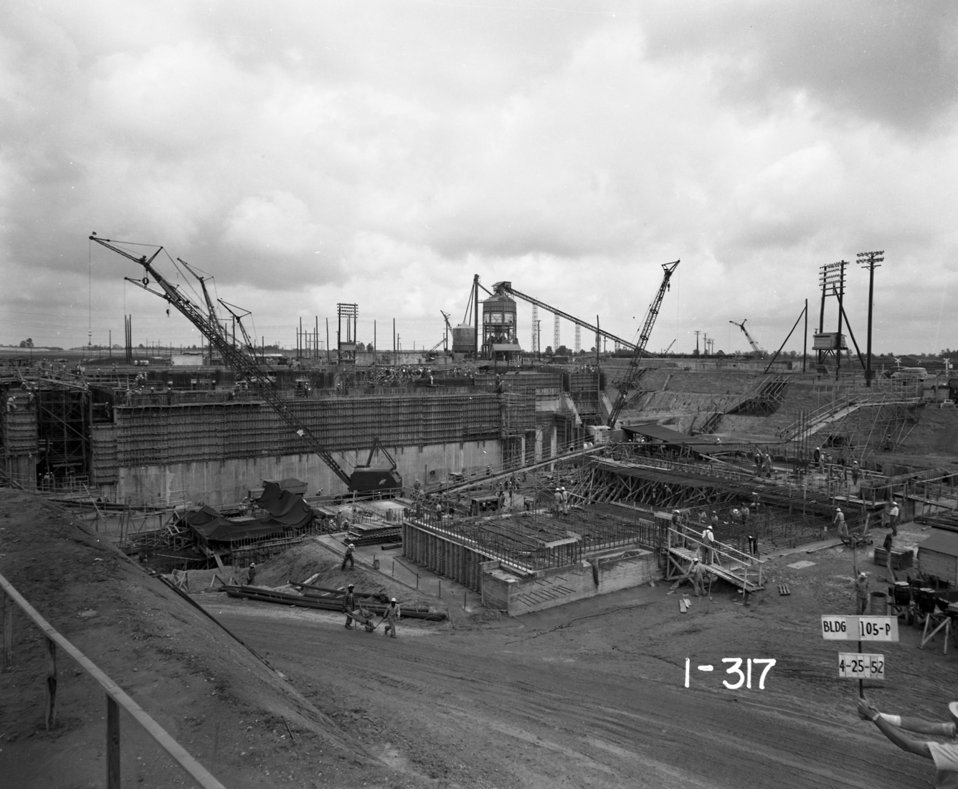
Historic P and R Reactor Photos - Savannah River Site

These photos from the 1950s show the construction of Savannah River Site’s P and R Reactors, as well as activities at the reactors once they became operational that decade. Each of the reactors, which formerly produced nuclear materials, occupies more than 300,000 square feet of space.